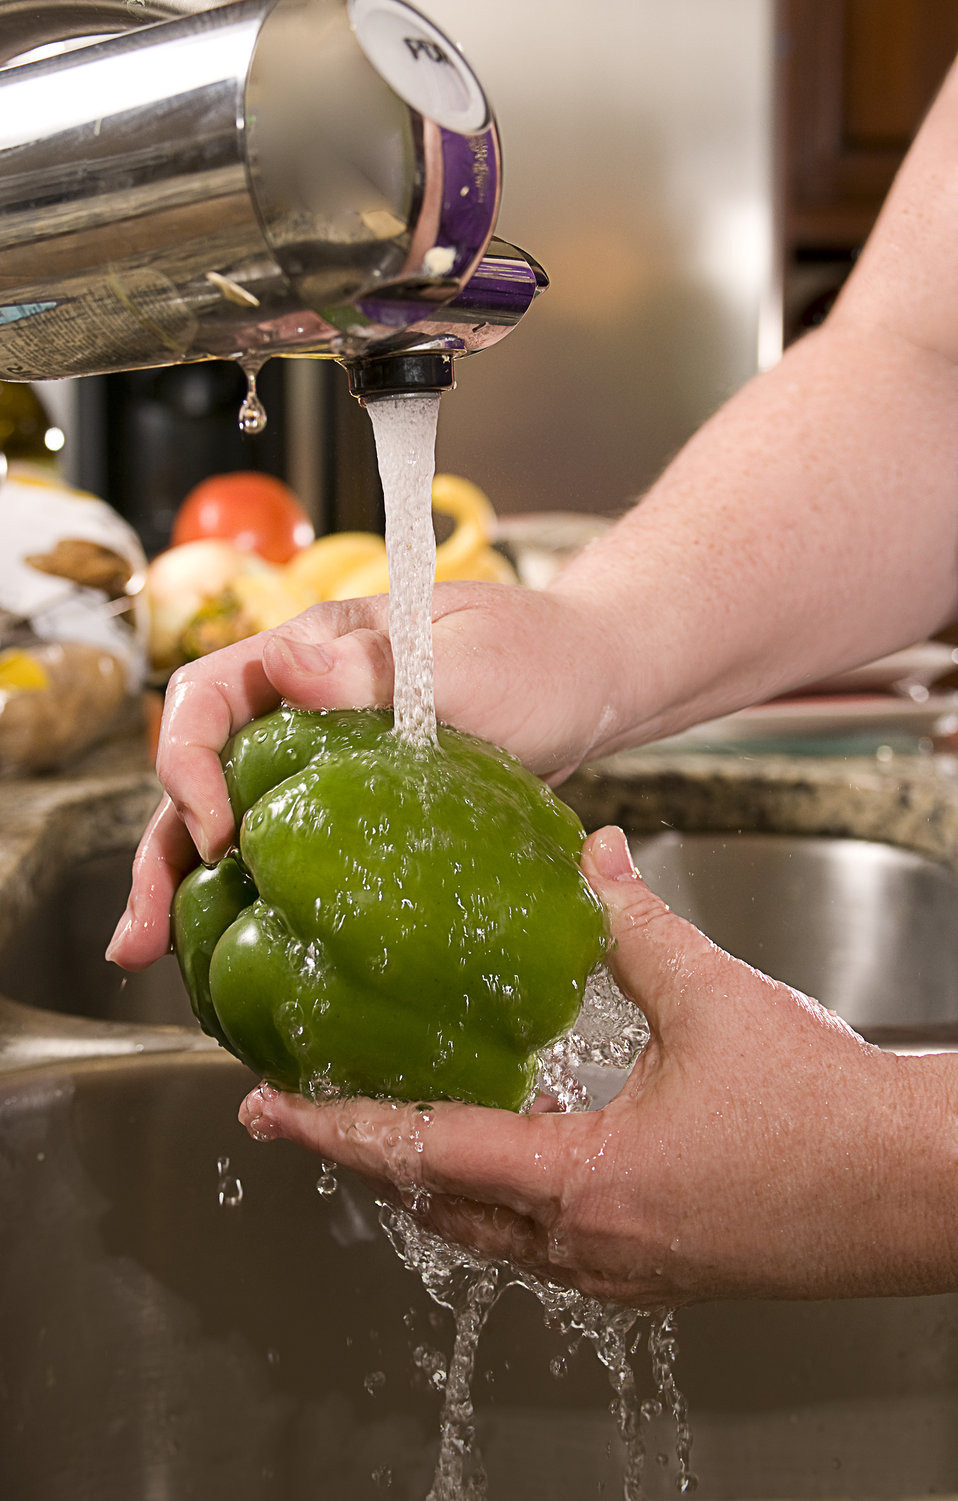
Pictured here in this kitchen setting were the hands of a woman who'd just purchased some fresh groceries, which could be seen in the background, and was in the process of washing a green bell pepper under some fresh running tap water, prior to preparing it in a meal.